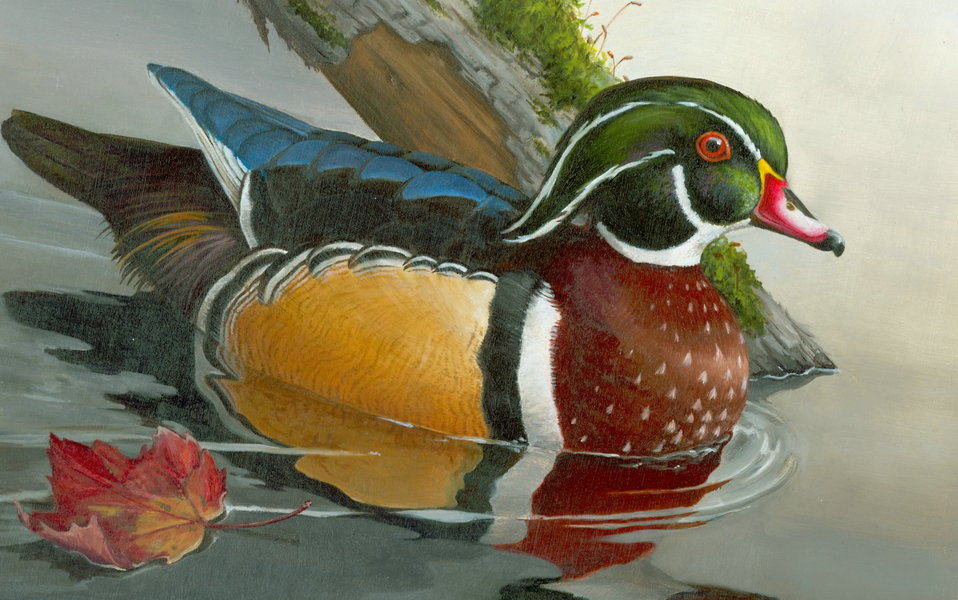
Connecticut

2012 Jr Duck Stamp Program
State Best of Show
Connecticut